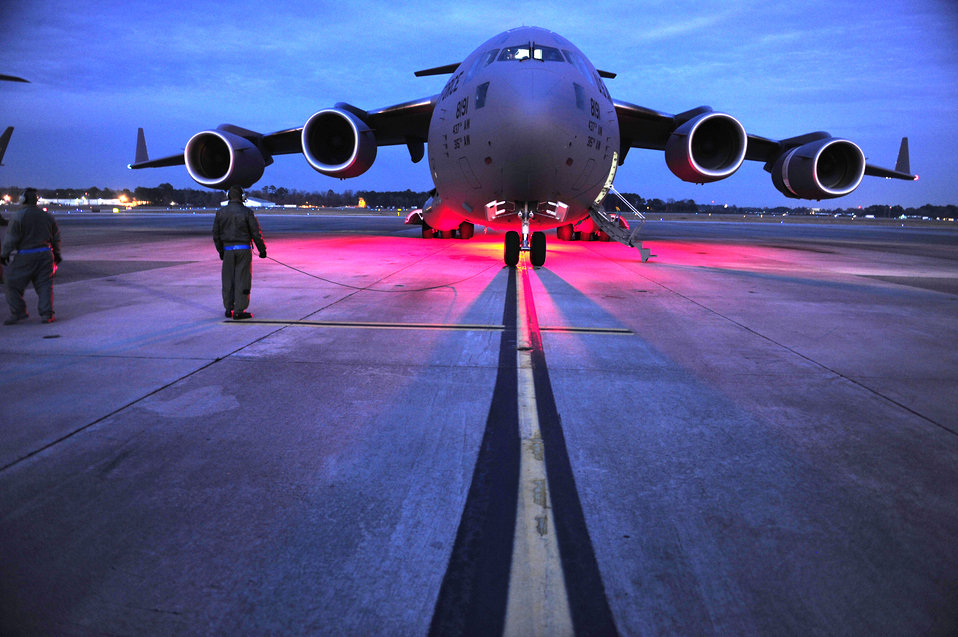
Haiti Relief Operations

Tech. Sgt. Robert Mabry conducts pre-flight duties Jan. 14, 2010, at Charleston Air Force Base, S.C. Sergeant Mabry is a reservist loadmaster with the 317th Airlift Squadron, 437th Air Mobility Wing. Airmen from the 437th Air Mobility Wing are contributing to the relief effort to Haiti.